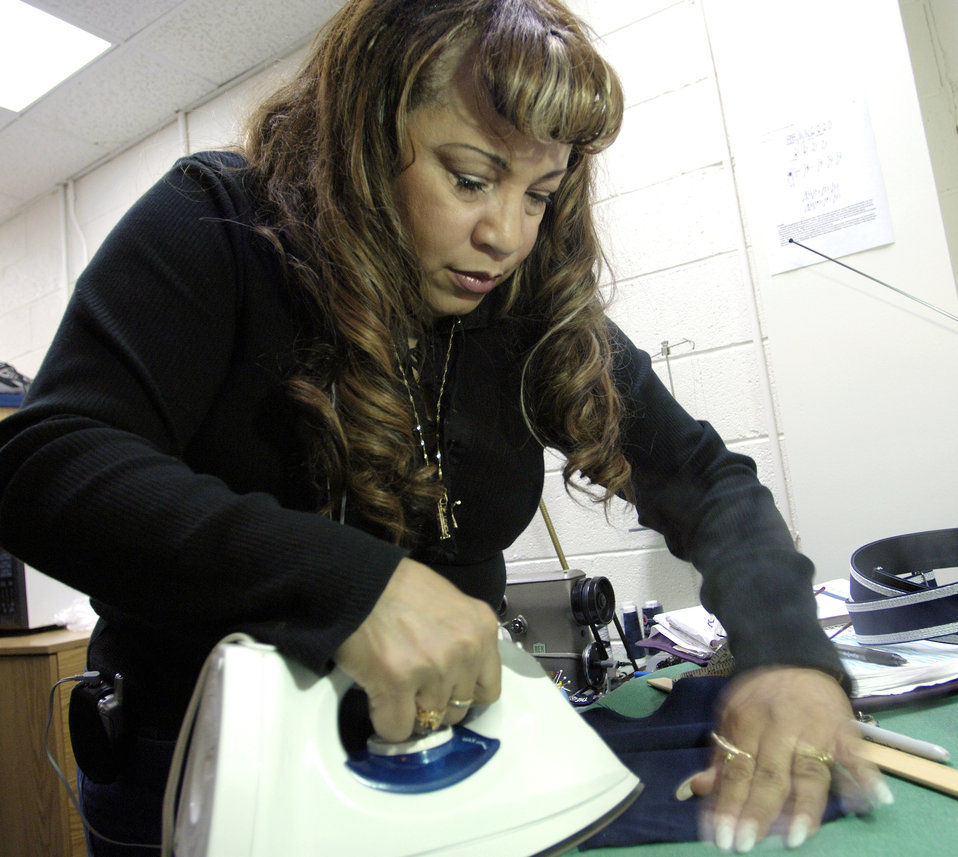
Band Seamstress

BOLLING AIR FORCE BASE, D.C. (AFPN) -- Retired Senior Master Sgt. Juanita Williams works on one of the many U.S. Air Force Band uniforms that needs her attention. Ms. Williams volunteers her time once a week to help keep band members here looking their best for their many performances throughout the Washington, D.C. area and on their world travels. She was a part of the band for many years before her retirement in 1995.